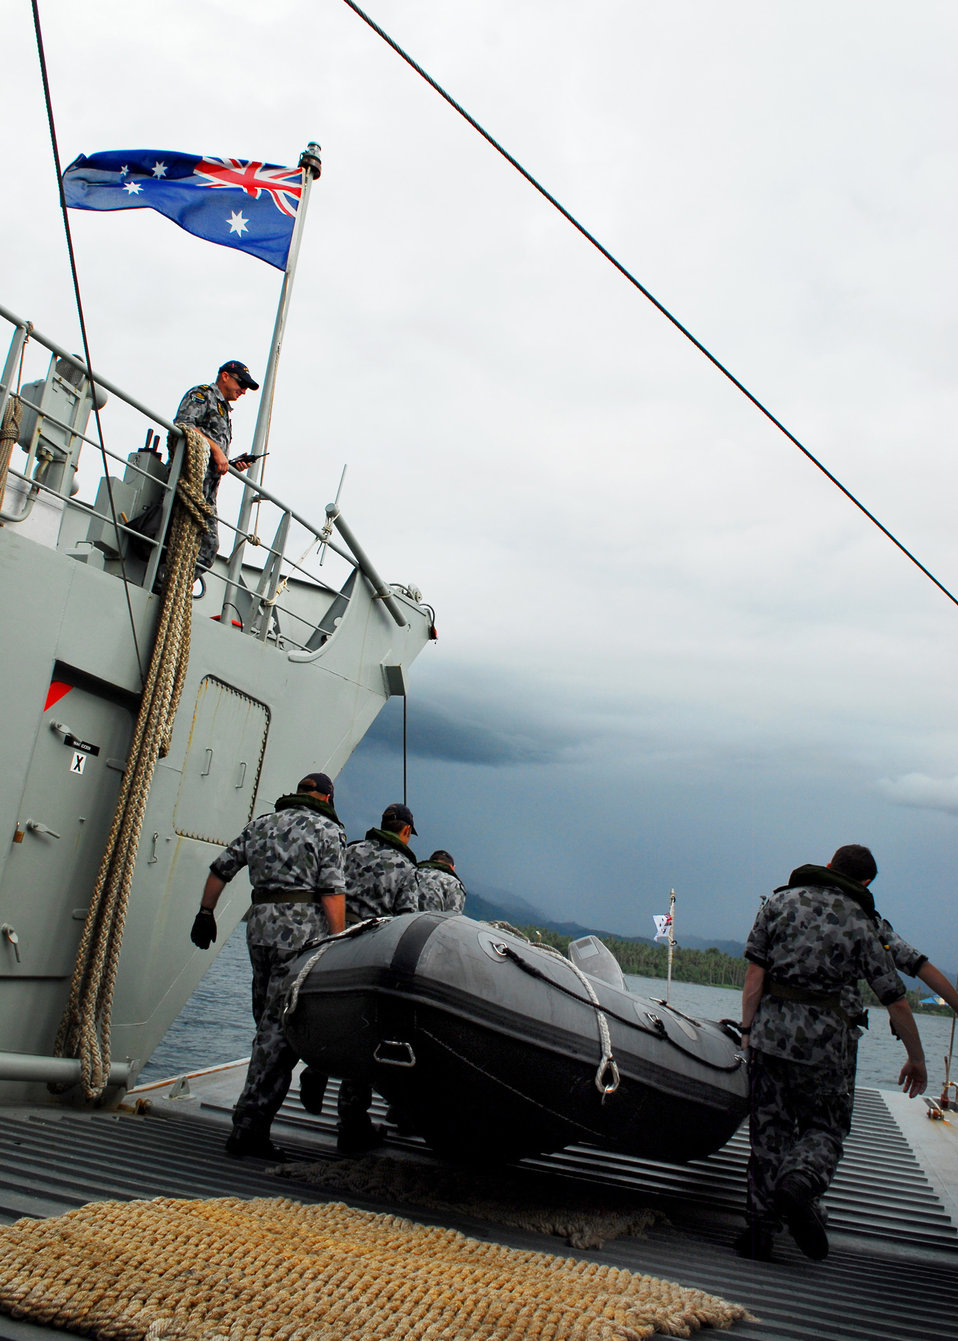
Australian Royal Navy Sailors carry a Rigid Hull Inflatable Boat to the water to prepare visitors from The Military Sealift Command hospital ship USNS Mercy (T-AH 19) for departure after touring Her Majesty Australian Ship (HMAS) Labuan (L128) in Sofifi, Indonesia, on July 20, 2010. Mercy is in the North Maluku Islands conducting Pacific Partnership 2010, the fifth in a series of annual U.S. Pacific Fleet endeavors conducted in Indonesia as a disaster relief exercise aimed at strengthening regional partnerships.